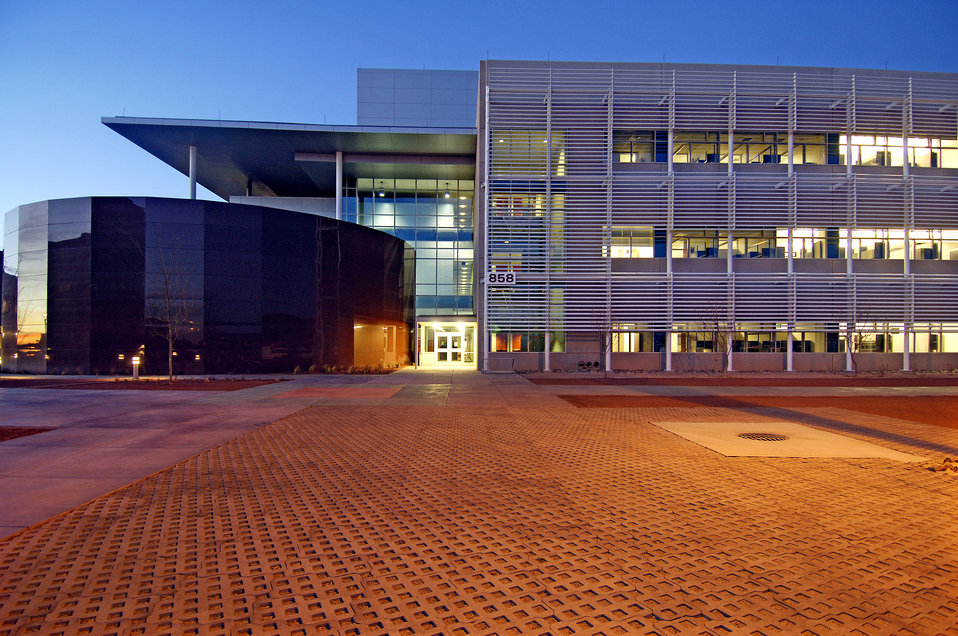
At Sandia, the Microsystems and Engineering Sciences Applications (MESA) complex's initial mission is to produce electronic circuits and computer chips designed to withstand high levels of radiation. These hardened electronics are critical to national security needs. Beyond its security role, MESA's combination of high-performance computing simulations, scientific research, and production capabilities in electronics and optics at the micro and nano levels makes it a world leader in a new type of simulation-led engineering that improves the quality of consumer goods.